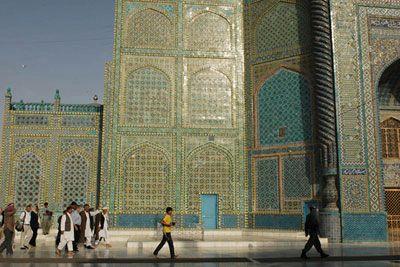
The Blue Mosque Is Shown

A photo is taken of the Blue Mosque in Mazar-e-Sharif, Afghanistan, on October 11, 2010. Assistant Secretary Schwartz then traveled to Afghanistan from October 10-12, 2010. He began with a visit to a rural village comprised primarily of returnees, where U.S. funds have supported a healthcare facility that will now be run by the Afghan Ministry of Public Health. In Mazar-e-Sharif, he visited a government-provided land allocation site for returnees, as well as a center for Afghan women returnees focused on literacy training, heath education, rights awareness and cultural studies. In Kabul, he toured the Orthopedic Hospital run by the International Committee for the Red Cross.